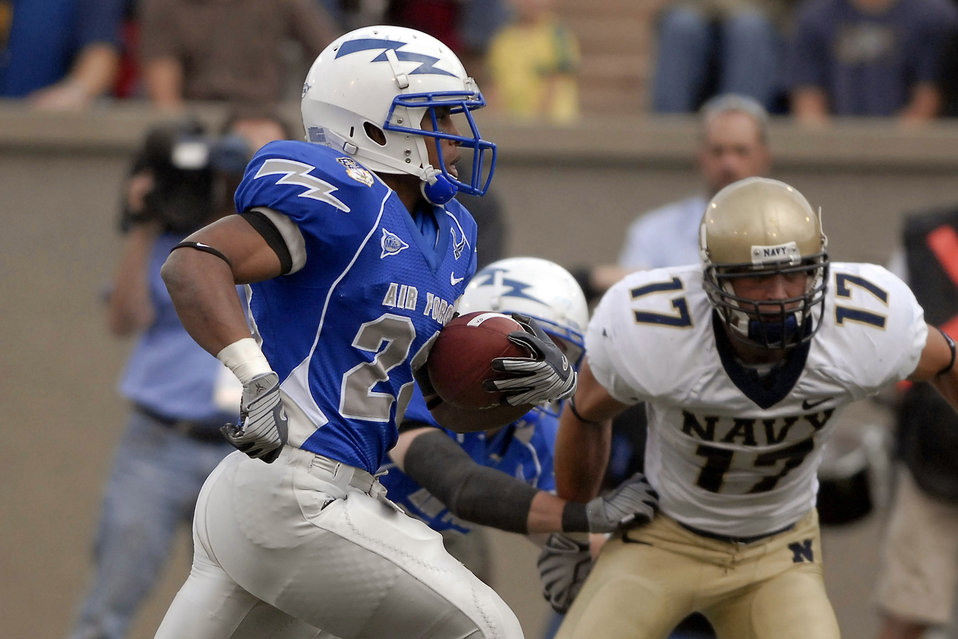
Gaining yards

U.S. Air Force Academy sophomore tailback Kyle Lumpkin gains yardage as Navy beat the Falcons for the 6th consecutive time, 33-27 at the Academy in Colorado Oct. 4.